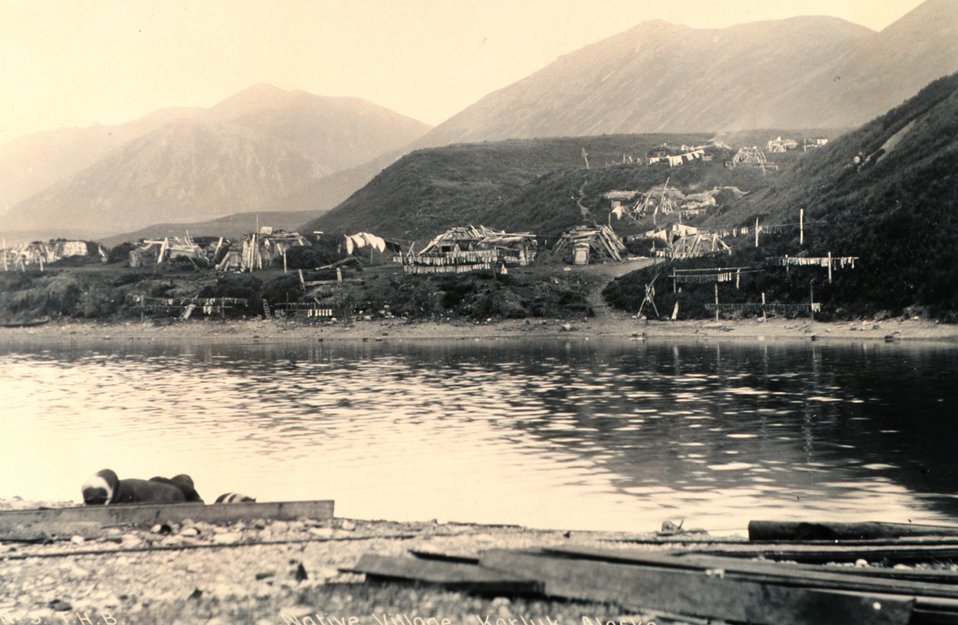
A native Aleut village at Karluk. Sod houses serve as insulation against the cold. F&WS 14,664.